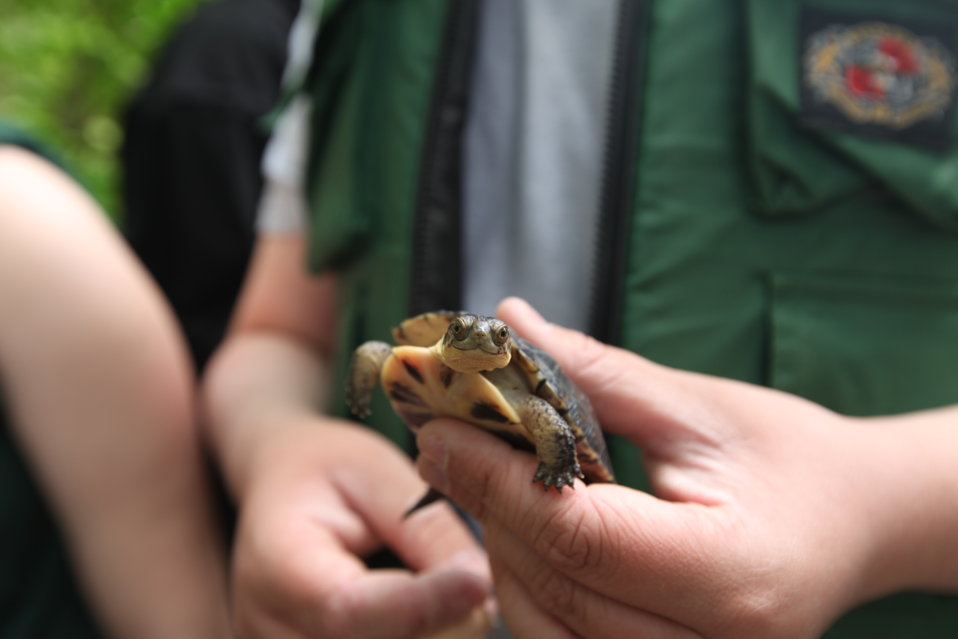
Blanding's turtle release May 2011

Bristol County Agricultural School sophomores partnered with species experts to raise Blanding's turtles and released them in late spring into wetland habitat.